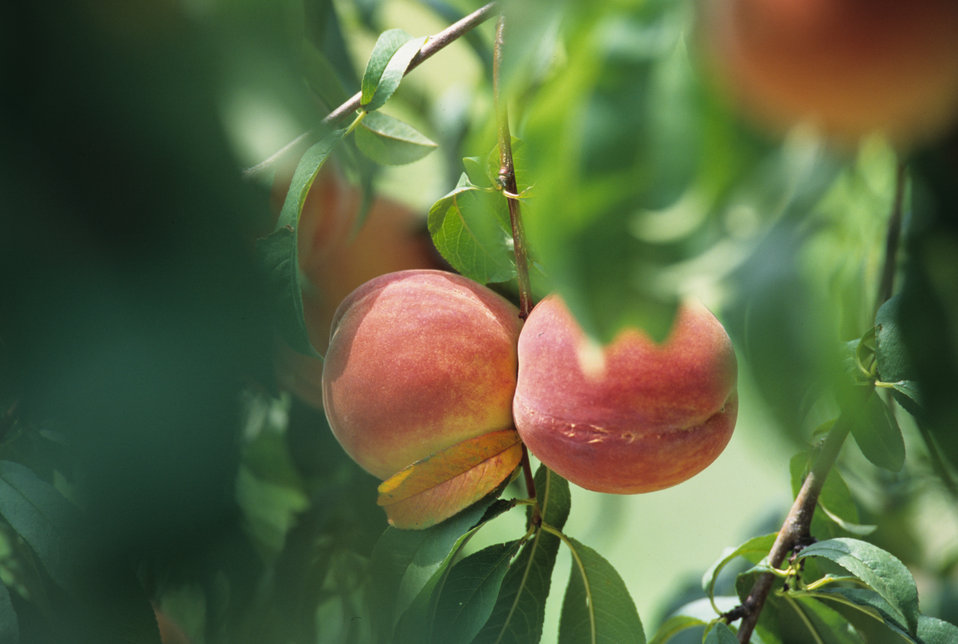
Peaches on the Williams Manor Peach Orchard in Morrisville, VA are ready for picking in mid August 1995.